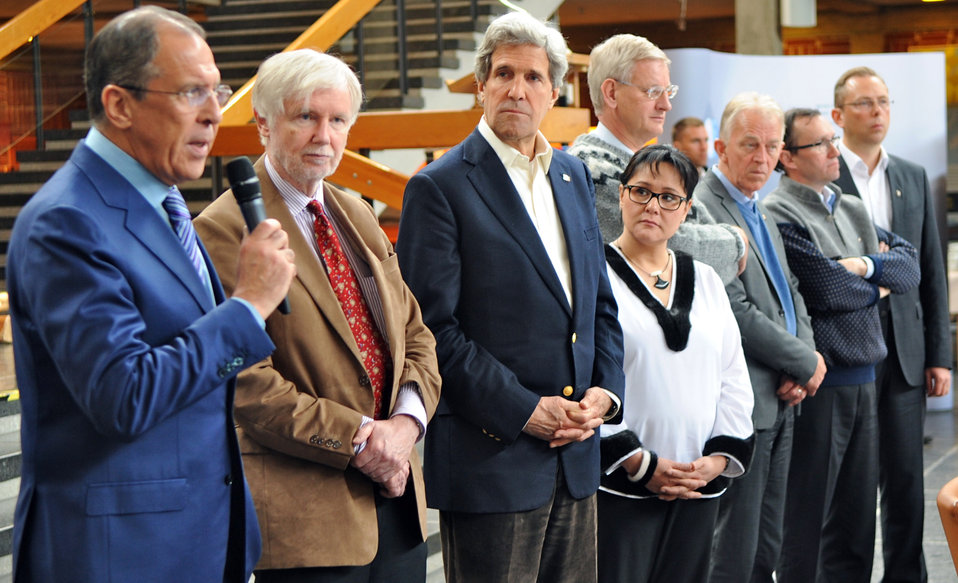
Secretary Kerry Attends the Closing Session of the Arctic Council Meetings

Russian Foreign Minister Sergei Lavrov answers a question during a ministerial news conference at the conclusion of an Arctic Council meeting in Kiruna, Sweden, on May 15, 2013..